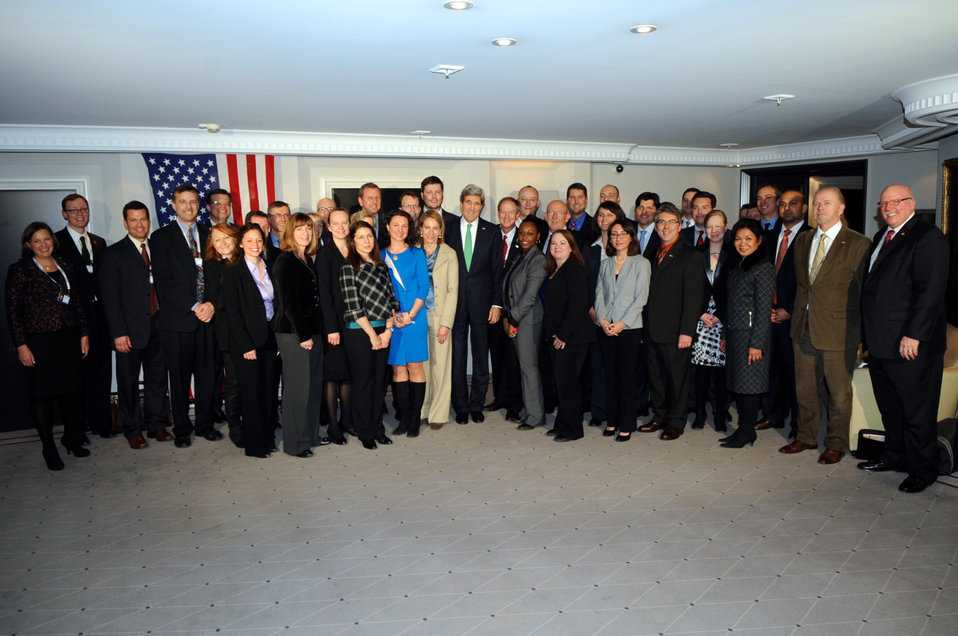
Secretary Kerry Poses for Group Photo With State Department Team in Germany

U.S. Secretary of State John Kerry, joined by U.S. Ambassador to Germany John Emerson and Assistant Secretary for European and Eurasian Affairs Victoria Nuland, poses for a group photo with State Department employees stationed around Germany who supported the Munich Security Conference in Munich, Germany on February 1, 2014.